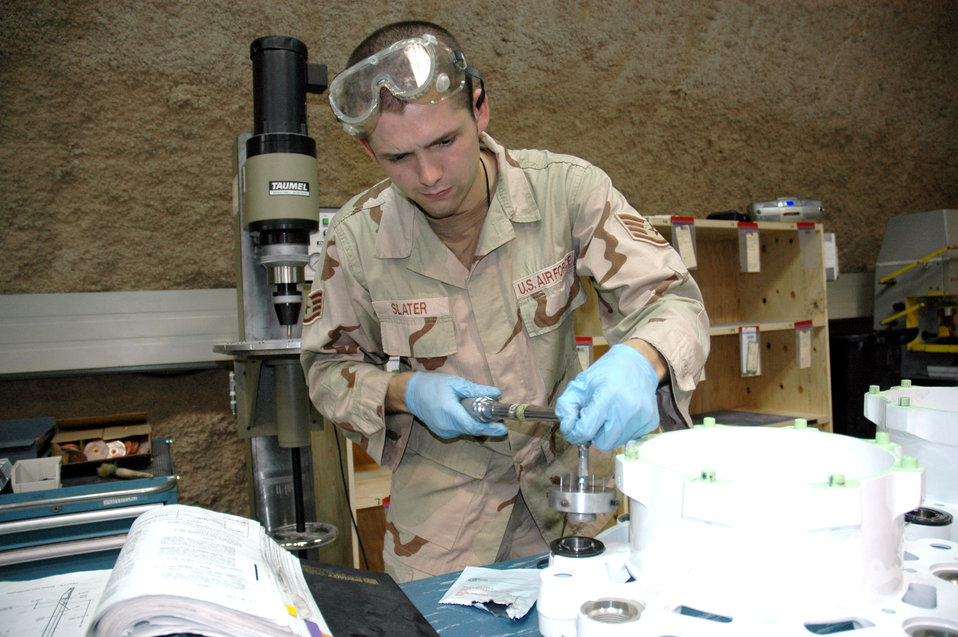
Centralized repair facility saves time, money

Staff Sgt. Joshua Slater, 379th Expeditionary Maintenance Squadron, installs a brake piston bushing on a KC-135 Stratotanker brake assembly. Sergeant Slater is a maintainer in the squadron's new centralized intermediate repair facility..